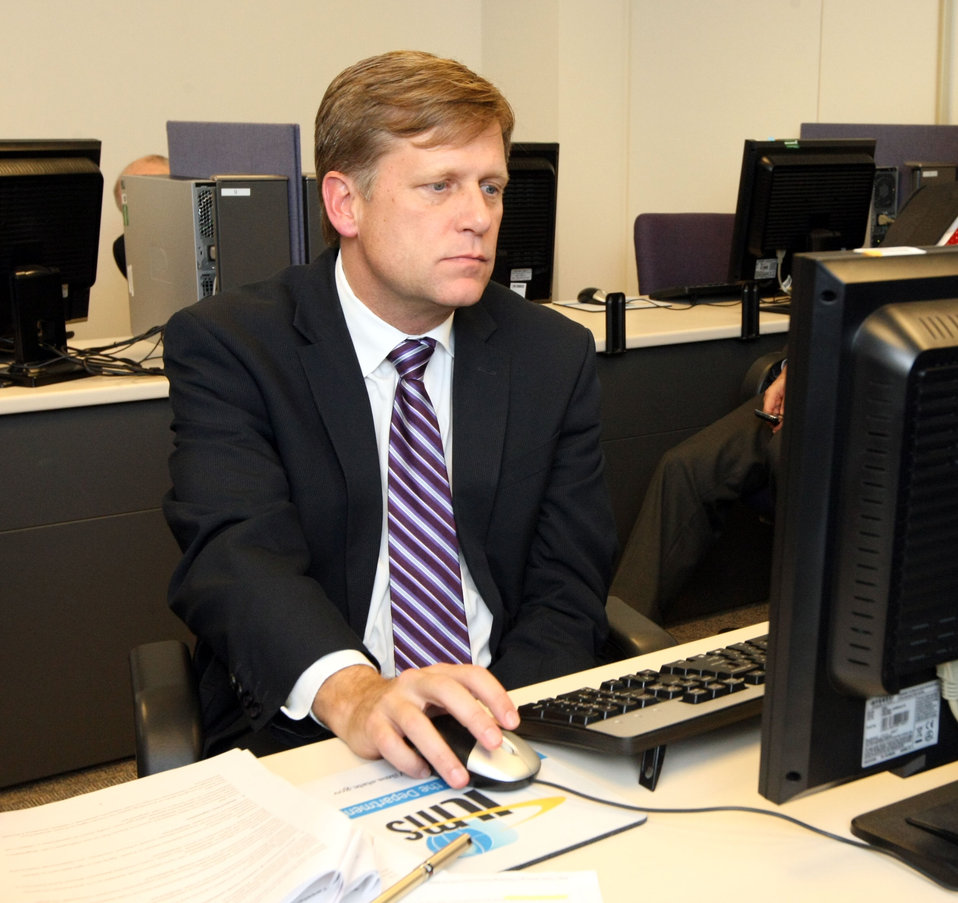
Ambassador McFaul Participates in a Twitter QandA

U.S. Ambassador to Russia Michael McFaul participates in a Twitter Q and A at the U.S. Embassy in Moscow, Russia, September 26, 2012.